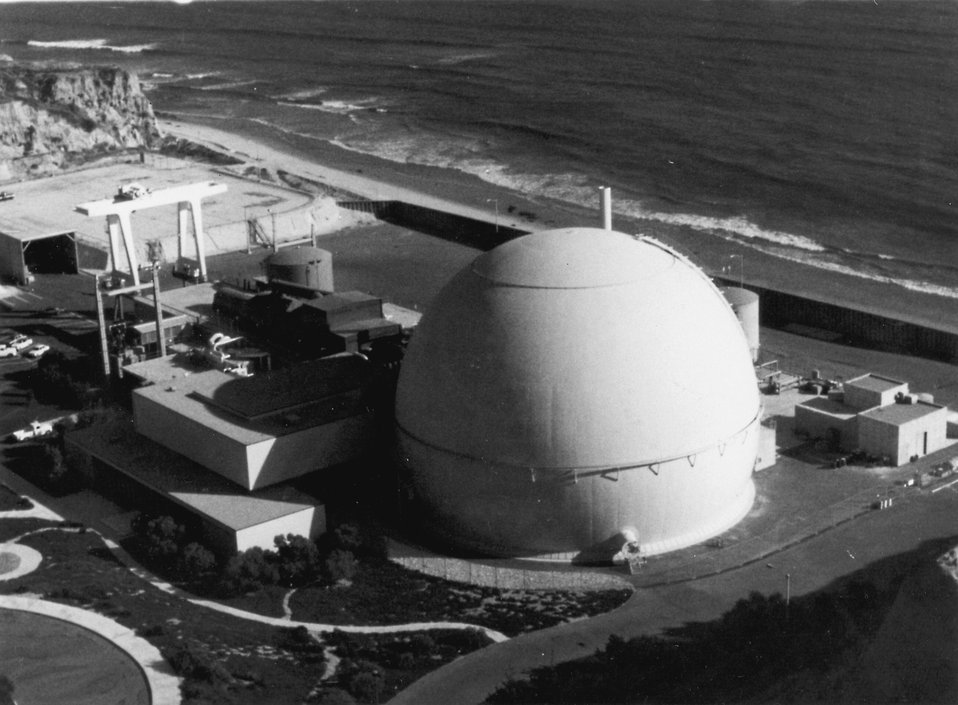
View of the 330 megawatt San Onofre Nuclear Power Reactor. Circa 1971.